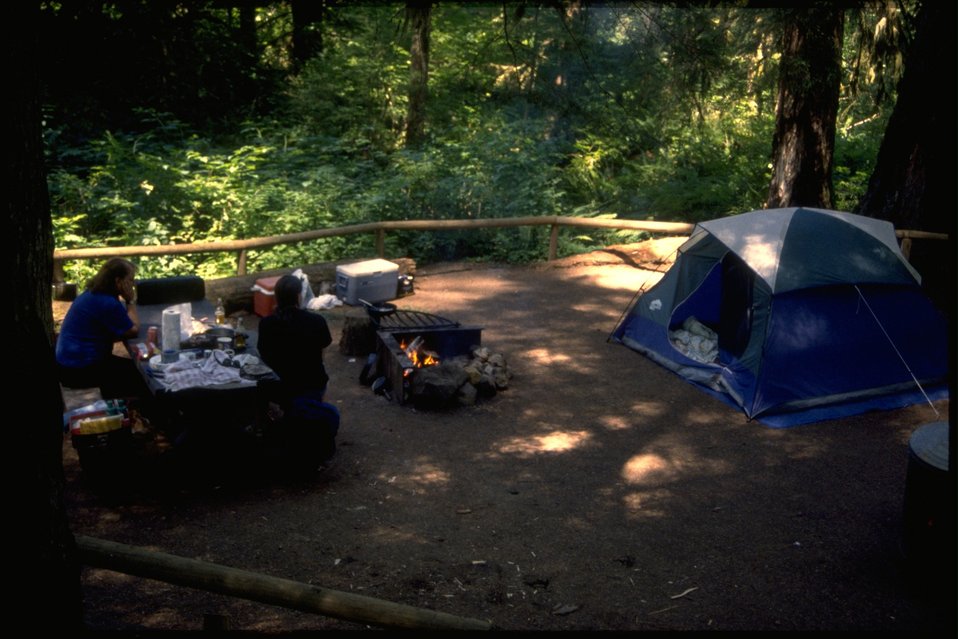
A campground at the Elk Horn Recreation Site.